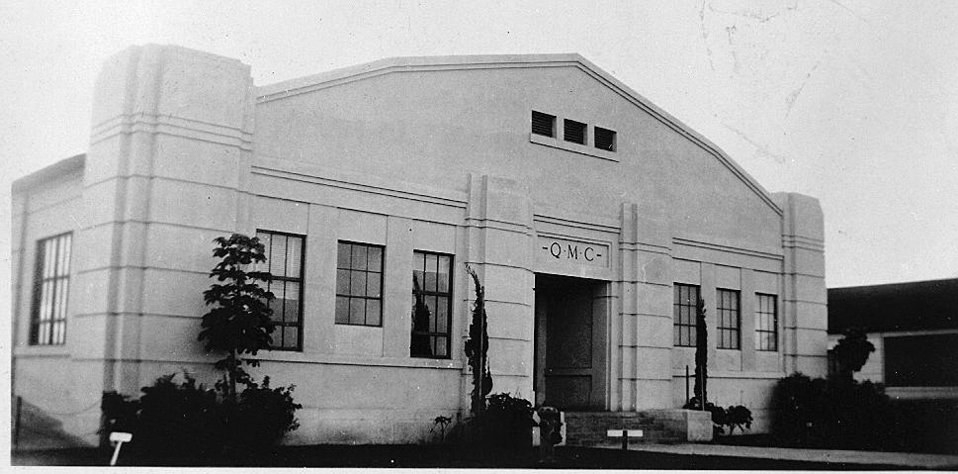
Quartermaster corps building

This is the quartermaster corps building at Hickam Field, Hawaii, in January, 1940.